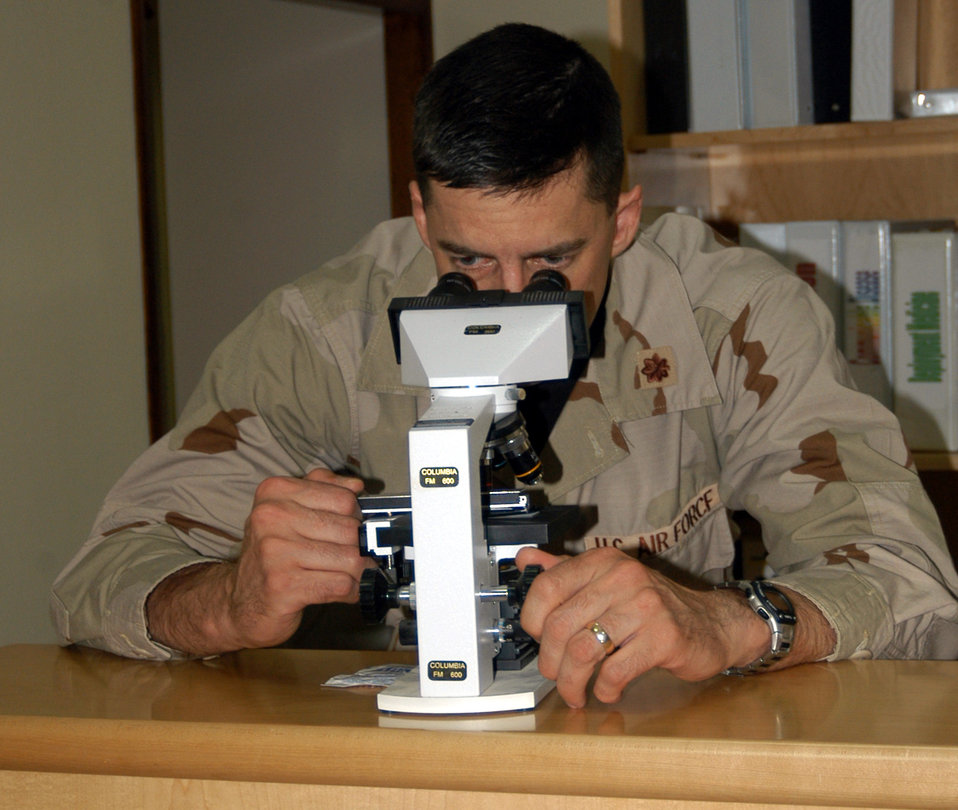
I spy with my eyes...

SOUTHWEST ASIA -- Maj. James Stiger, the 379th Expeditionary Medical Group's public health commander, inspects mosquito specimens taken from a trap. Public health officials are responsible for educating the wing on diseases related to the area and how to prevent them. Major Stiger is deployed from Randolph Air Force Base, Texas.